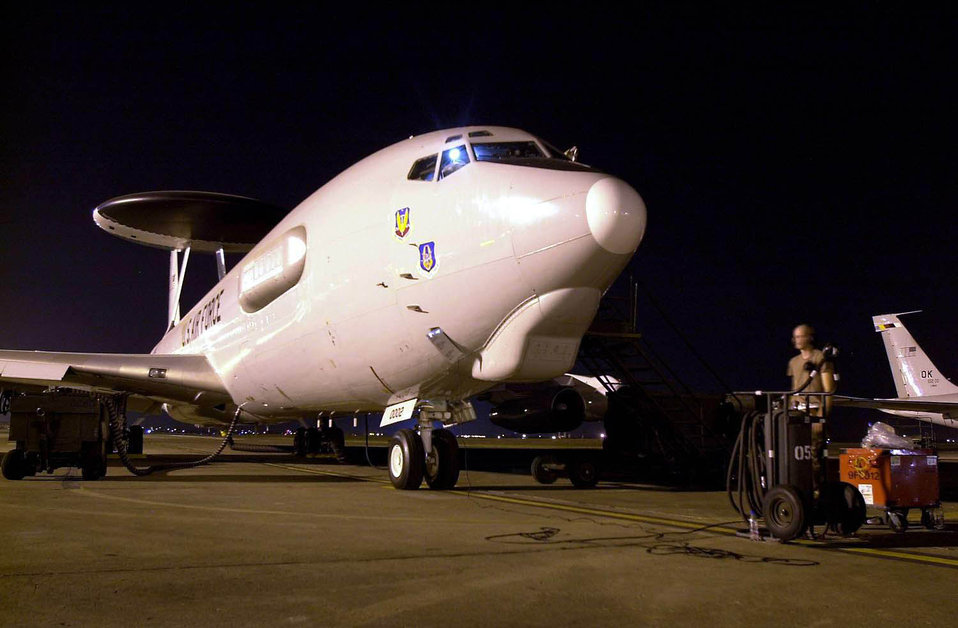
AWACS Support

OPERATION ENDURING FREEDOM -- An E-3 Sentry Air Warning and Control System aircraft is prepared for takoff in support of Operation Enduring Freedom. The E3 aircrews will monitor and control a package of aircraft escorting C-17 transport planes flying humanitarian airlift missions into eastern Afghanistan.